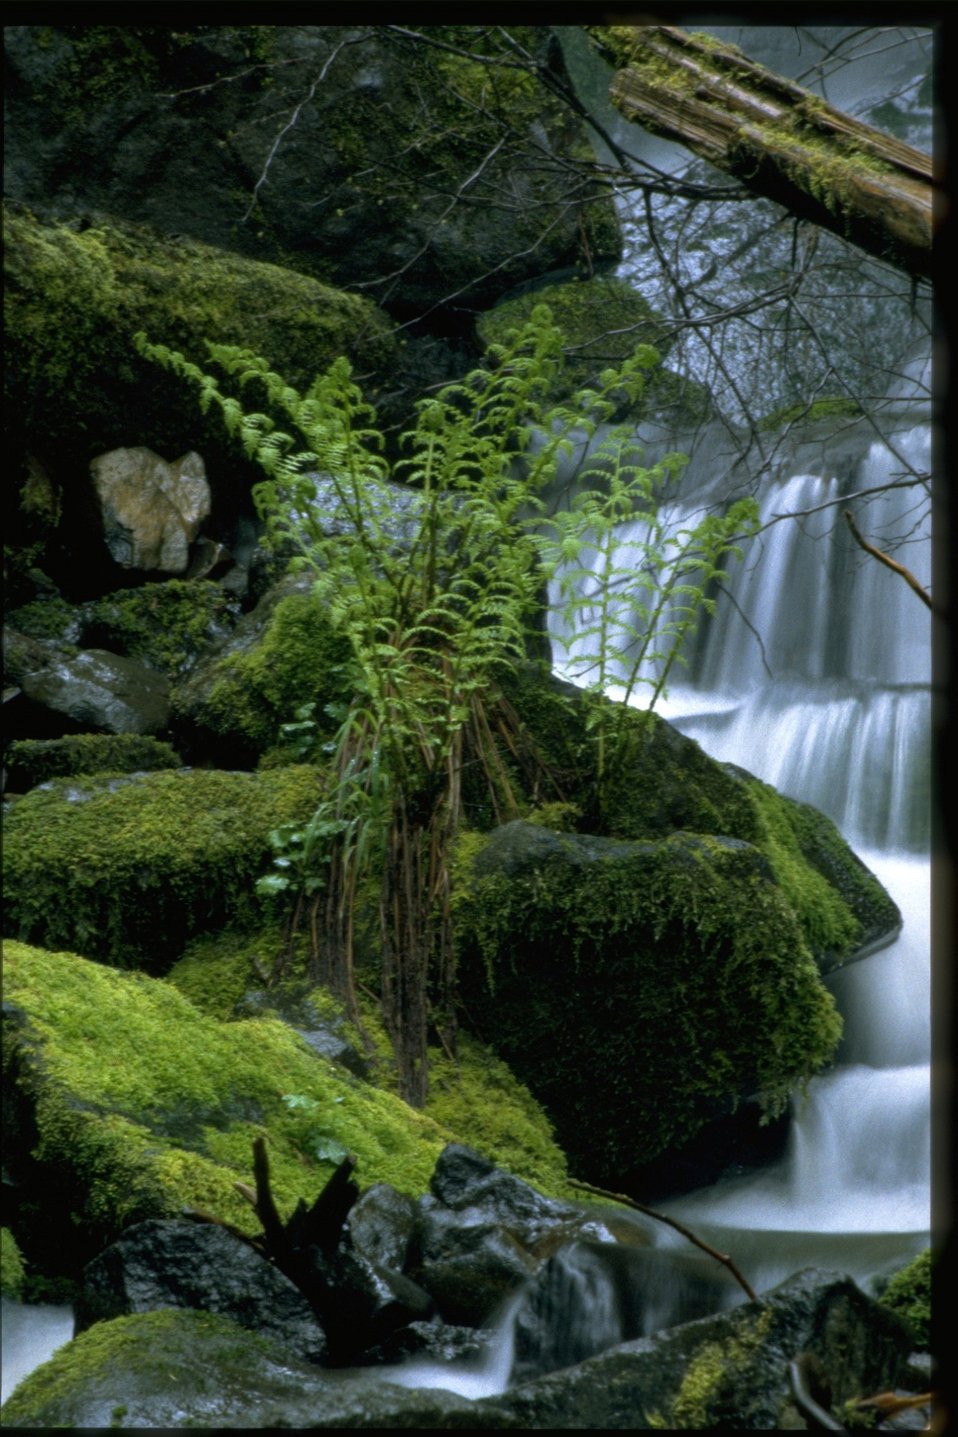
Swiftwater stream.